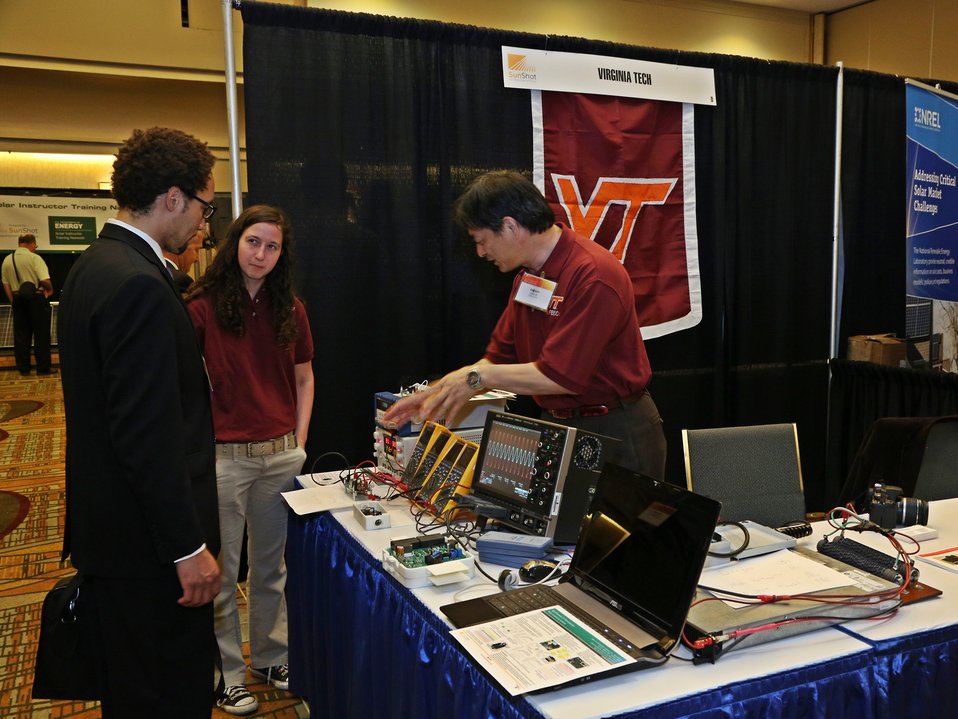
Tech Forum 12

Members of Virginia Tech talking to attendees at their booth.